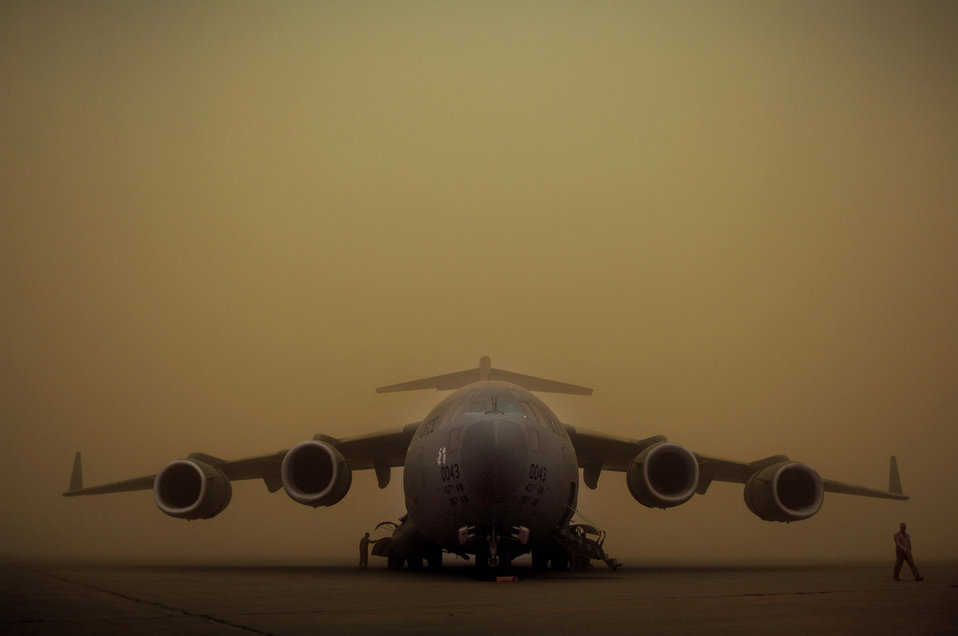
Fighting the dust bowl

1st Lt. Matheew Lundeen (left) and Maj. Mark Thompson walk around their C-17 Globemaster III April 17 while it's parked on the flight line during a dust storm at Sather Air Base, Iraq. The dust storm reduced visibility to 100 meters and stopped all air traffic.